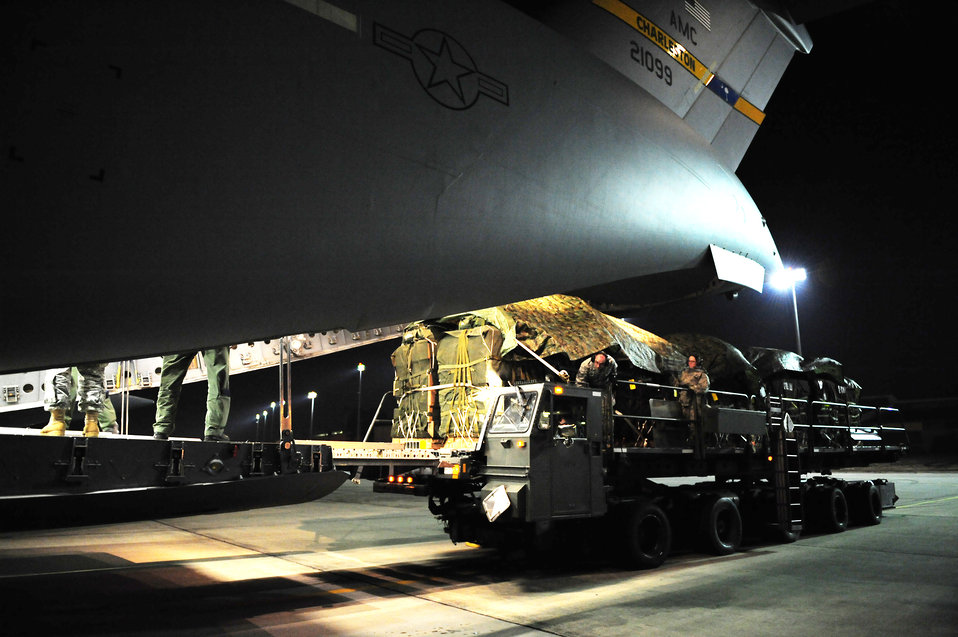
Meals, water delivered for Haiti relief

Airman assigned to the 43rd Logistical Readiness Squadron at Pope Air Force Base, N.C., load a C-17 Globemaster III before an air delivery mission in support of Operation Unified Response Jan. 21, 2010. The crew loaded 40 container delivery system bundles totaling 67,800 pounds of Meals, Ready to Eat and bottled water. The C-17 and aircrew were from Charleston AFB, S.C.